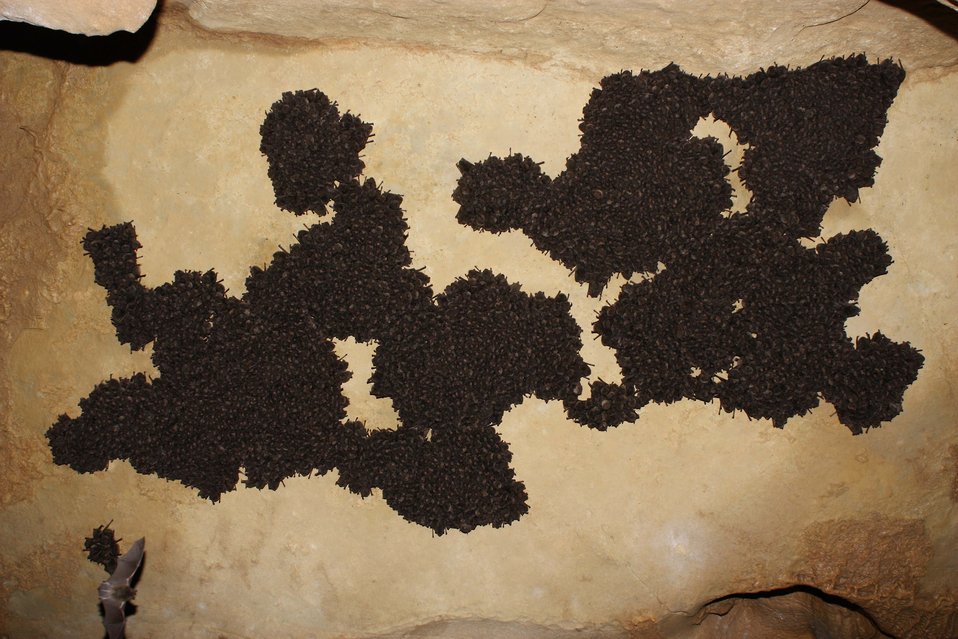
Indiana bats on cave ceiling.

Credit: USFWS; Andrew King